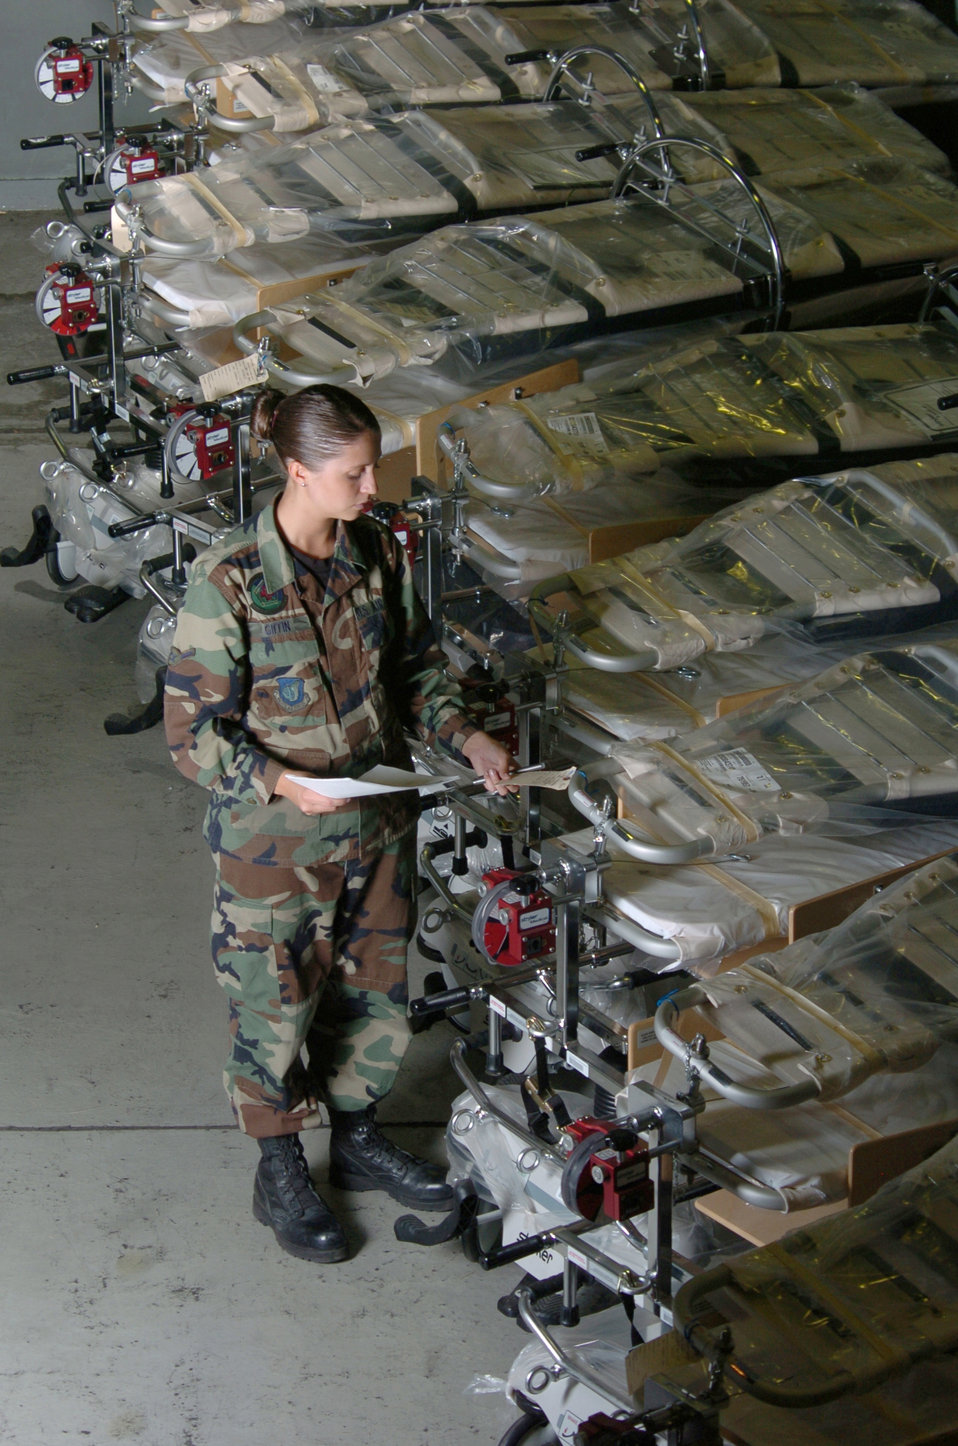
Bed check

YOKOTA AIR BASE, Japan -- Airman Camille Giffin inventories a row of turn frame orthopedic beds here during routine inspection. The beds are used to stabilize patients with back injuries. Airmen from the logistics flight here store, maintain and deploy about $12 million worth of medical war reserve materiel for servicemembers from the 374th Airlift Wing, 5th Air Force and U.S. Forces Japan. Airman Giffin is a medical logistics technician with the 374th Medical Group.